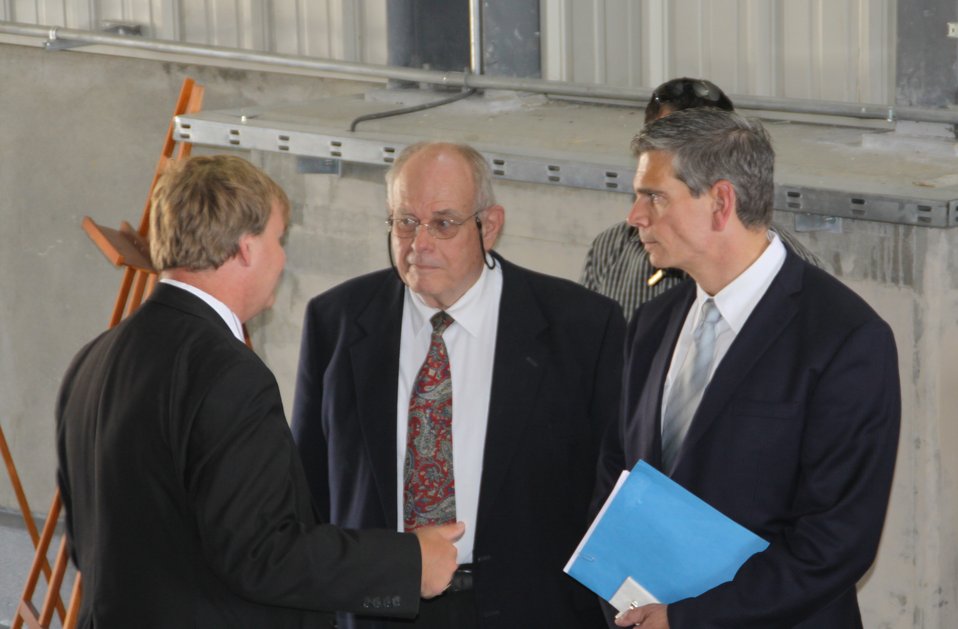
105 MW Tarakhil Power Plant Handover